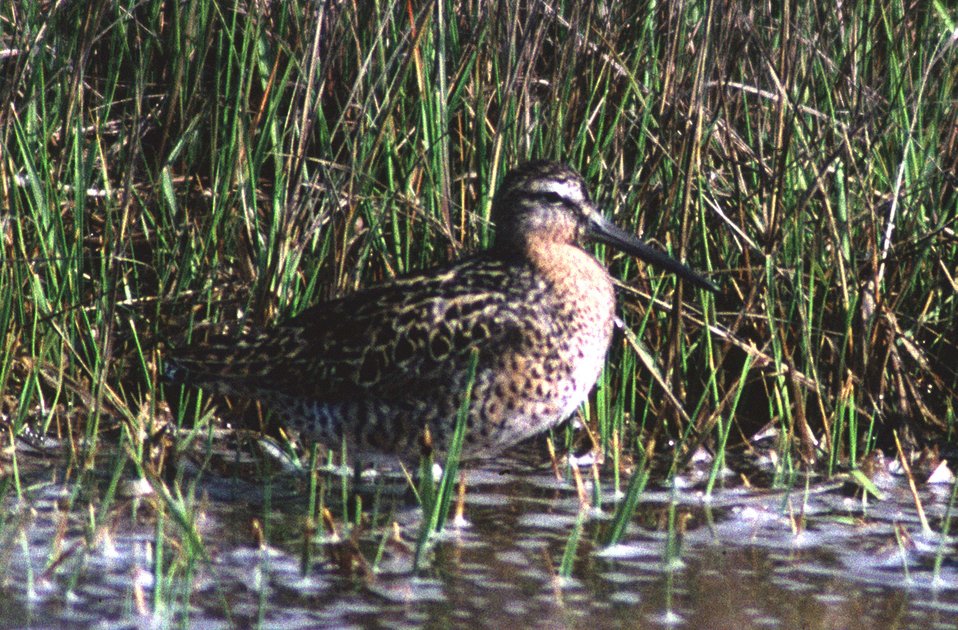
Short Billed Dowitcher

Stone Harbor, NJ.